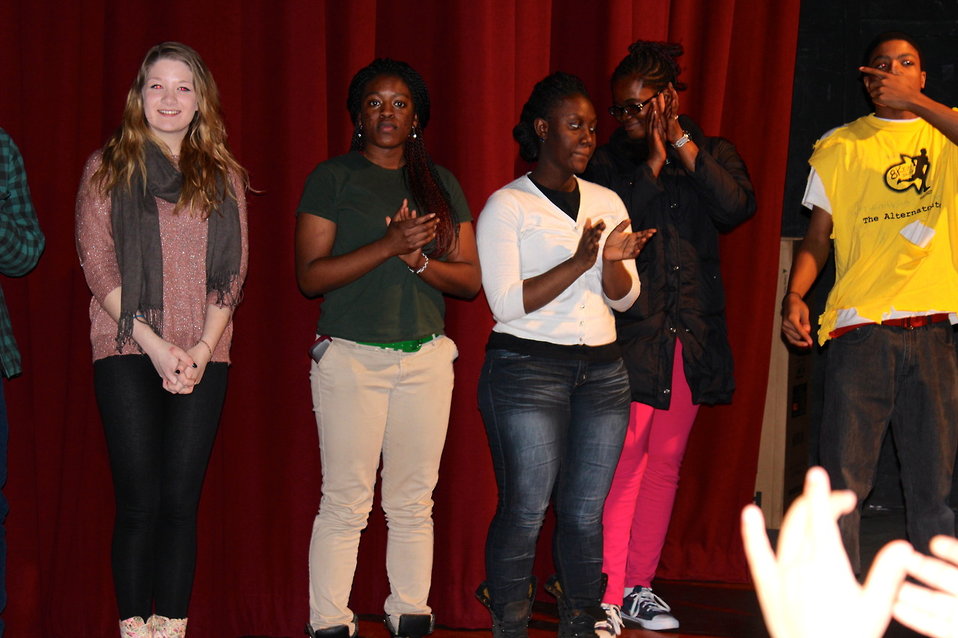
YEP Youth Empowerment Program Poetry Slam held at Alternative group

Youth Empowerment Program Poetry Slam held at Alternatives on Jan. 30 which was held to observe National Drug Facts Week and support youth in making healthy lifestyle choices.